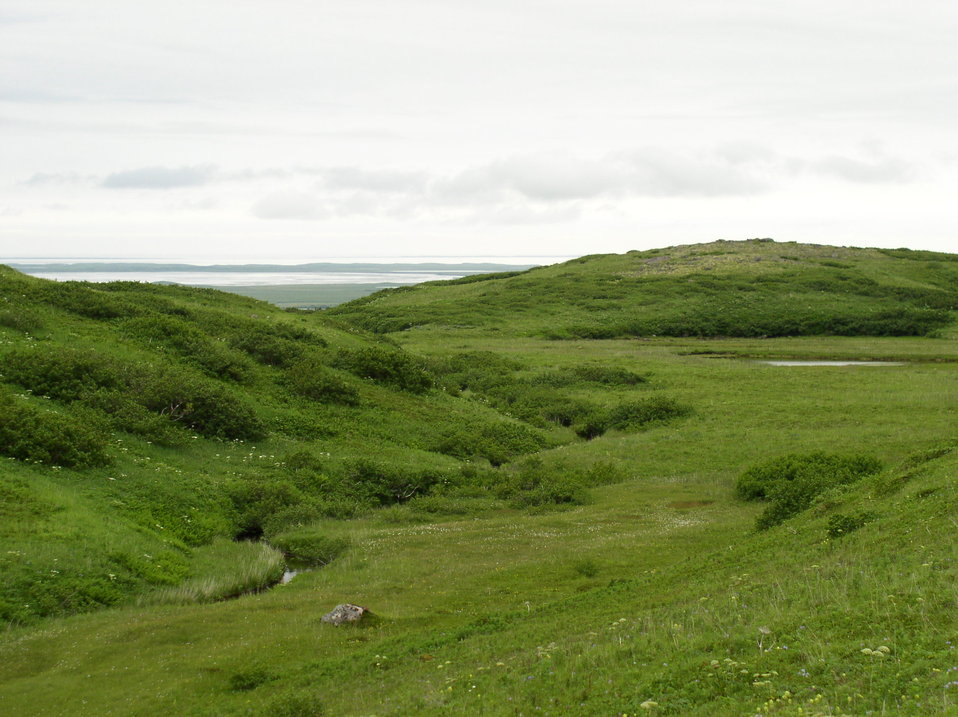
Izembek Wilderness

Wilderness near Frosty Peak, Izembek National Wildlife Refuge
Photo by Kristine Sowl,
USFWS, Public Domain